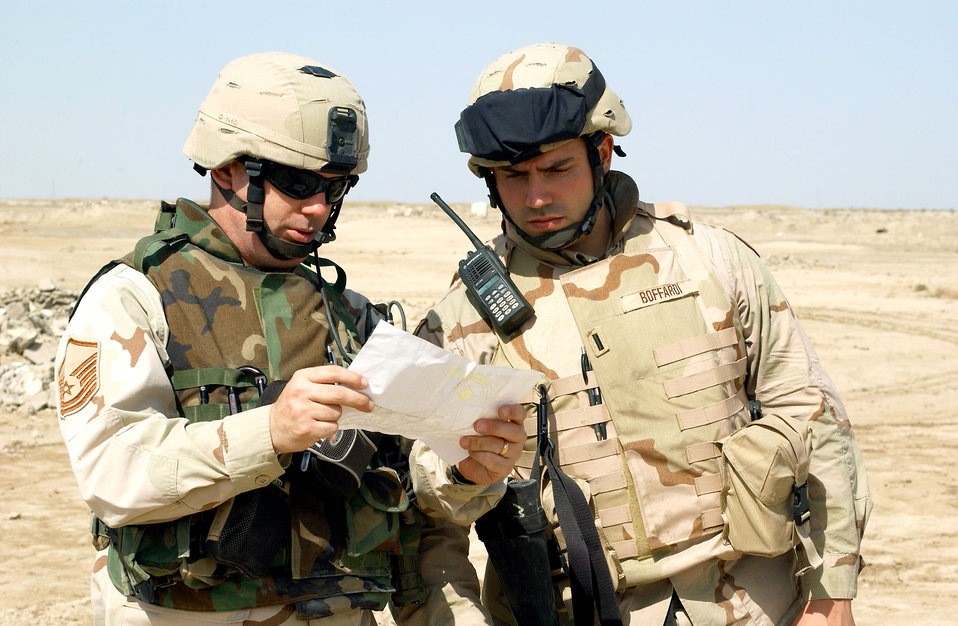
Airmen, Soldiers reach out to local Bedouins

NEAR TALLIL AIR BASE, Iraq -- Master Sgt. John Ragland (left) discusses the next stop on a visit to Bedouin camps here with Army 1st Lt. Damien Boffardi. Sergeant Ragland is assigned to the 407th Security Forces Squadron, and Lieutenant Boffardi is assigned to the 484th Movement Control Battalion.